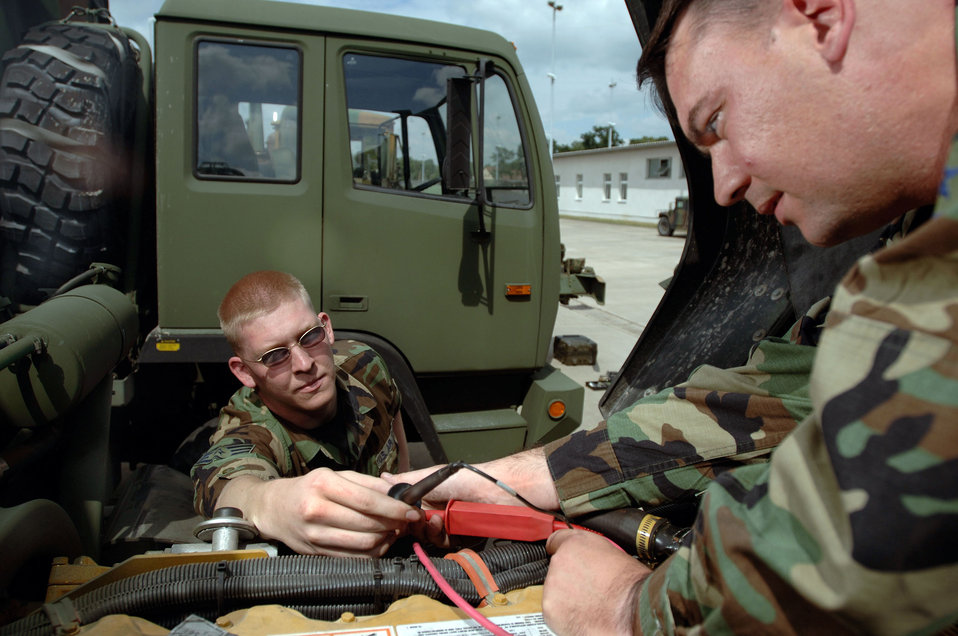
Vehicle Operations

SULLIVAN BARRACKS, Germany -- Staff Sgt. Kyle Polencheck (left) helps Tech. Sgt. Jeffery Egbert with lead cables as they check a faulty sensor on the engine of a light military tactical vehicle. The vehicle specialists help maintain a fleet of more than 85 vehicles ranging from Humvees to 5-ton military tactical trucks their squadron uses in Iraq and Afghanistan. They are assigned to the 4th Air Support Operations Squadron here.